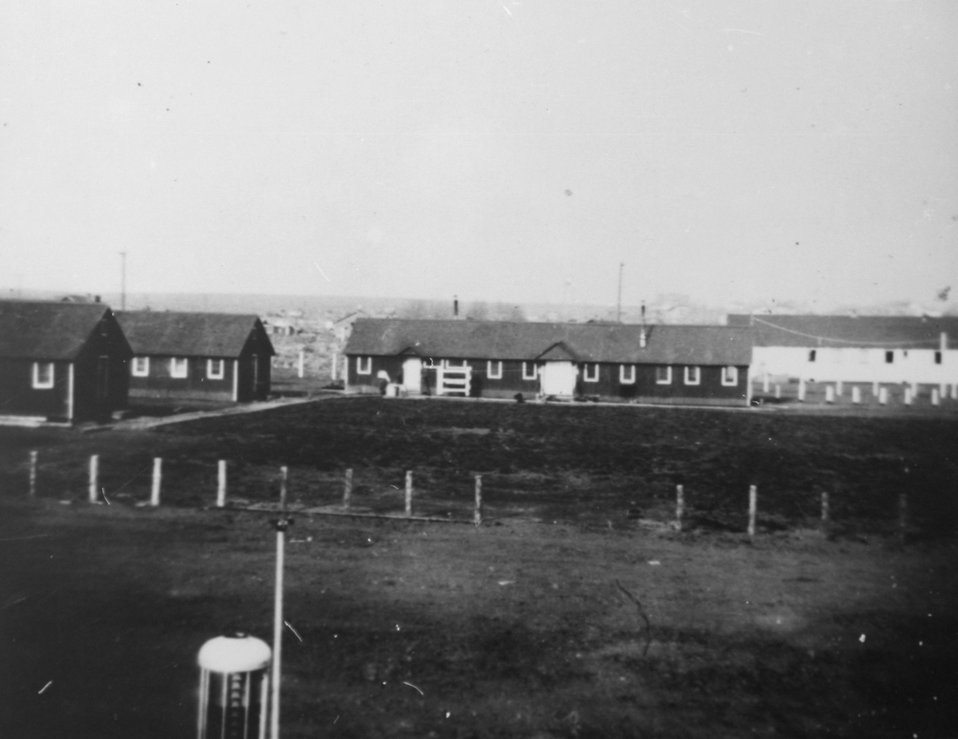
CCC Spike Camp at Burns, Oregon. circa 1939.. Later became BLM ware yard on Filmore Street.